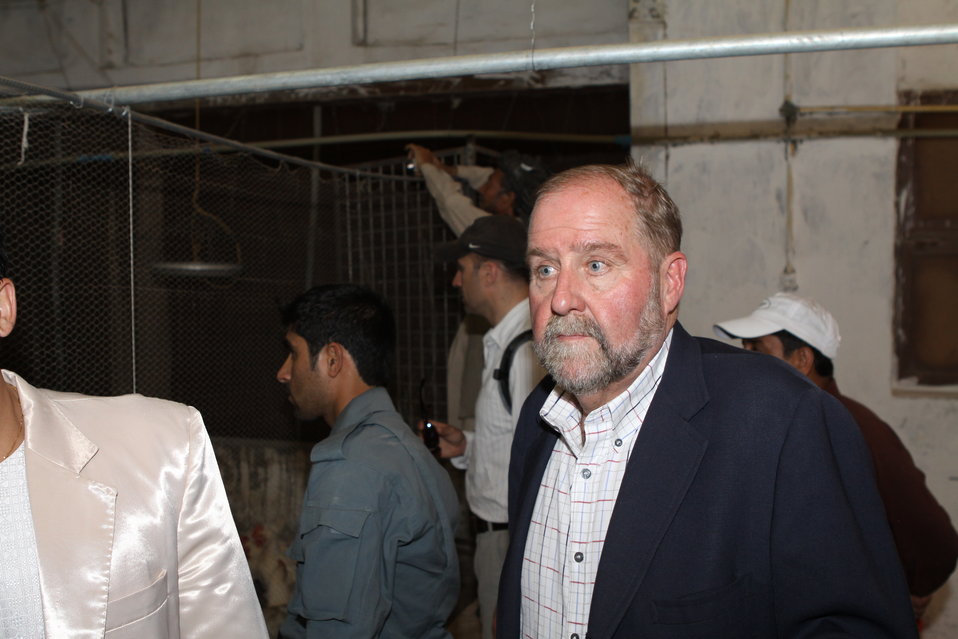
Bolan Poultry Farm